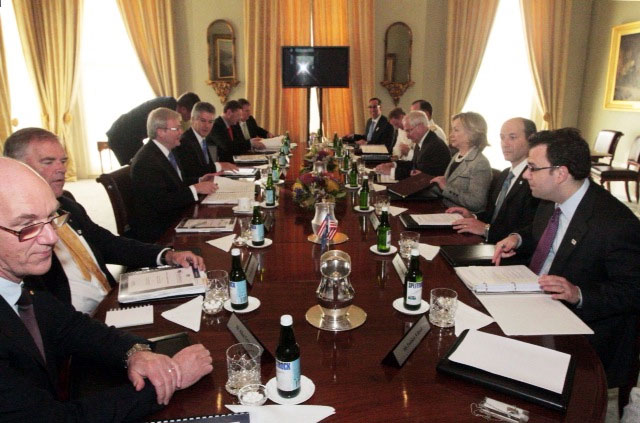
The AUSMIN Delegation Begins the First Session

The AUSMIN delegation sits down for the first session at Government House in Melbourne, Australia, on November 8, 2010. Individuals in the photo include: (left side of the table) Australian Ambassador to the U.S. Kim Beazley, second individual from the front, Australian Foreign Minister Kevin Rudd, third individual from the front, Australian Defense Minister Stephen Smith, fourth individual from the front; (right side of the table) U.S. Ambassador to Australia Jeff Bleich, second from the front, U.S. Secretary of State Hillary Rodham Clinton, third from the front, and U.S. Secretary of Defense Robert Gates, fourth from the front.